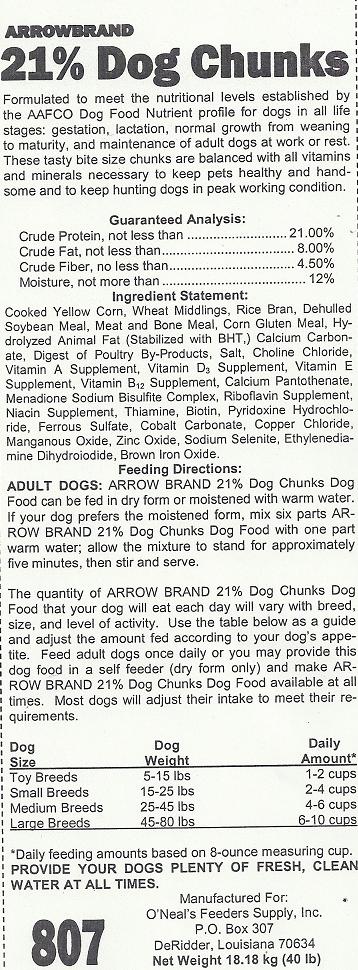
RECALLED - Dry dog food

December 13, 2011 - O’Neal’s Feeders Supply, Inc. Recalls Arrow Brand Dry Dog Food.